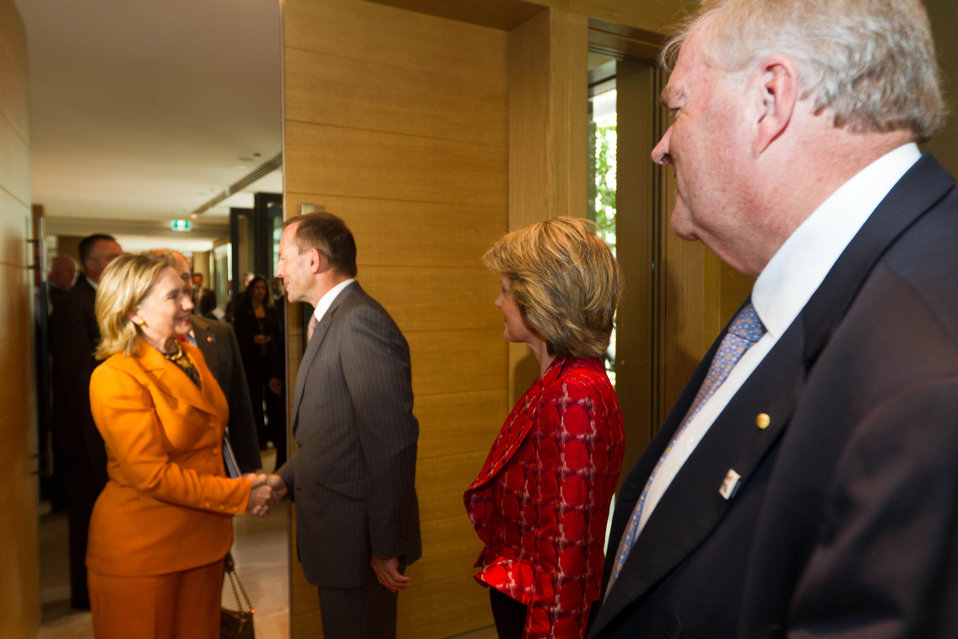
Secretary Clinton Is Greeted By Australian Opposition Leader Abbott

U.S. Secretary of State Hillary Rodham Clinton is greeted by Australian Opposition Leader Tony Abbott as Australia Opposition Deputy Leader Julie Bishop, second from right, and Australian Ambassador to the U.S. Kim Beazley, right, look on in the library at the Grand Hyatt in Melbourne, Australia, on November 7, 2010.